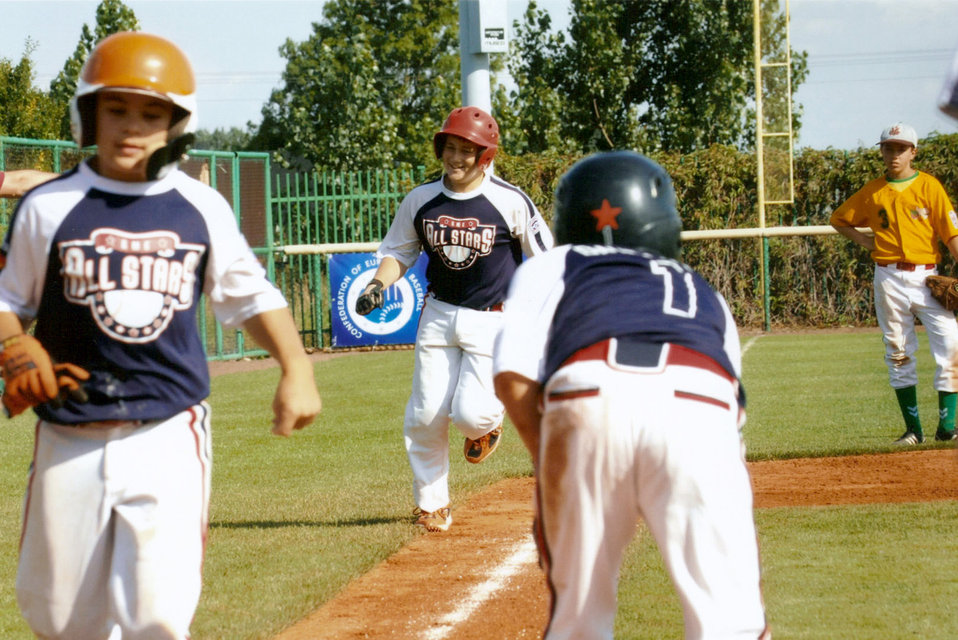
KMC team at LLWS

The Kaiserslautern Military Community Little League All-Star team earned a spot in the Little League World Series by beating Ukraine 10-0 in five innings August 3, 2010.The All-Stars are the first Department of Defense team to make it to the LLWS in a decade.